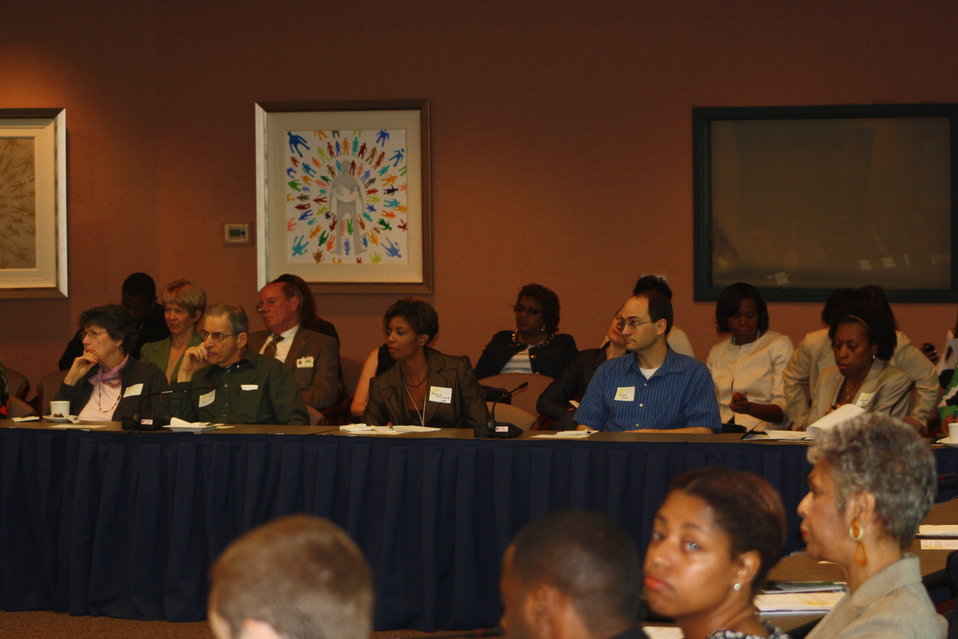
Faith-Based and Neighborhood Partnership launch at Atlanta's Carter Center